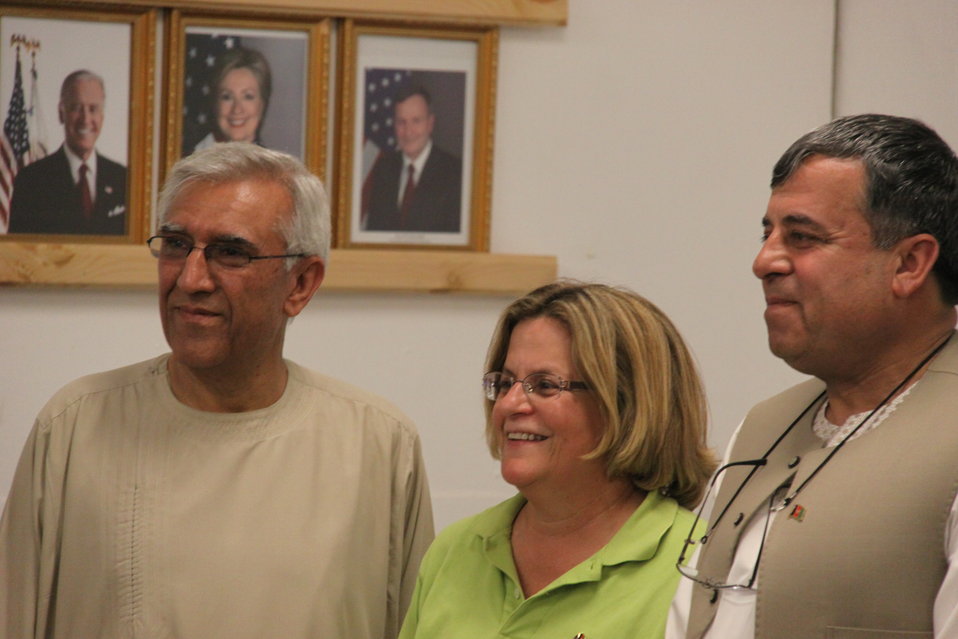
Meeting with Local Leaders in Kandahar